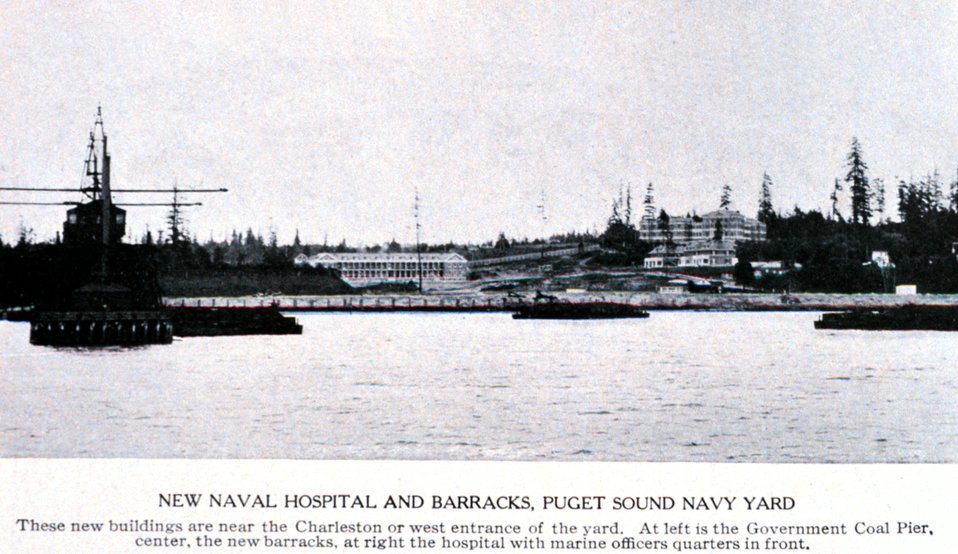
'New Naval Hospital and Barracks, Puget Sound Navy Yard'. In: 'Puget Sound and Western Washington Cities-Towns Scenery', by Robert A. Reid, Robert A. Reid Publisher, Seattle, 1912. P. 146.